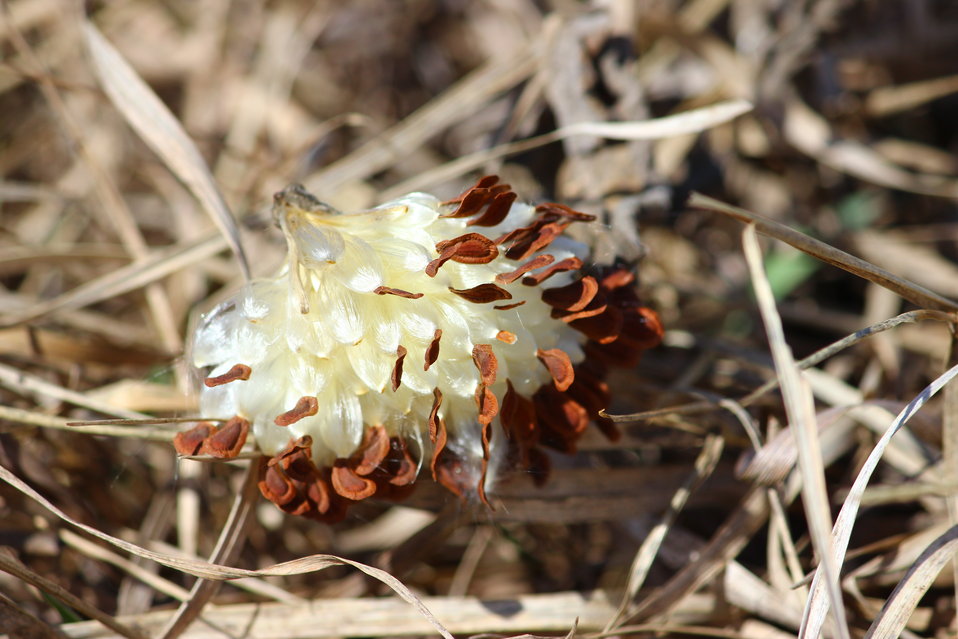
Common Milkweed Seeds

This milkweed pod first popped in the spring! It was found on the Kannowski WPA in LaMoure County, North Dakota.